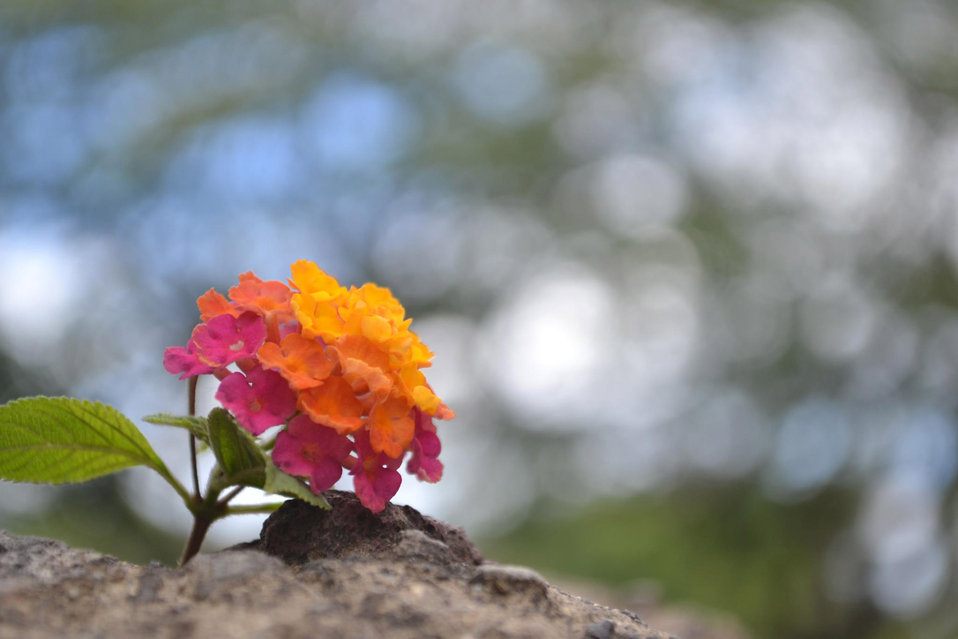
The flower at the park

Colorful flower.